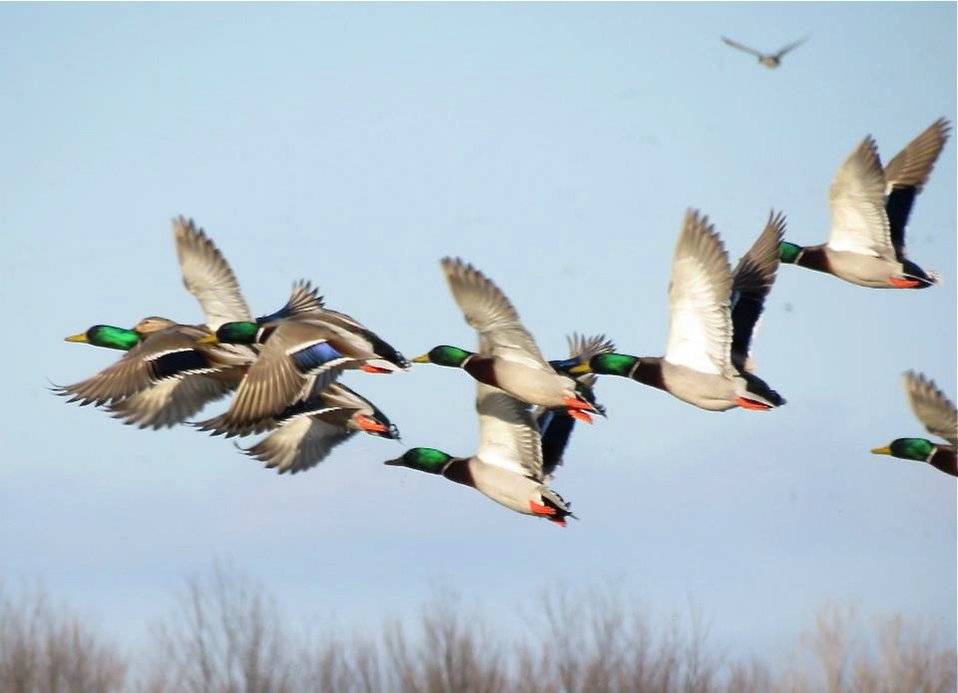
mallards on the move

Port Louisa National Wildlife Refuge, IA
February 26, 2012